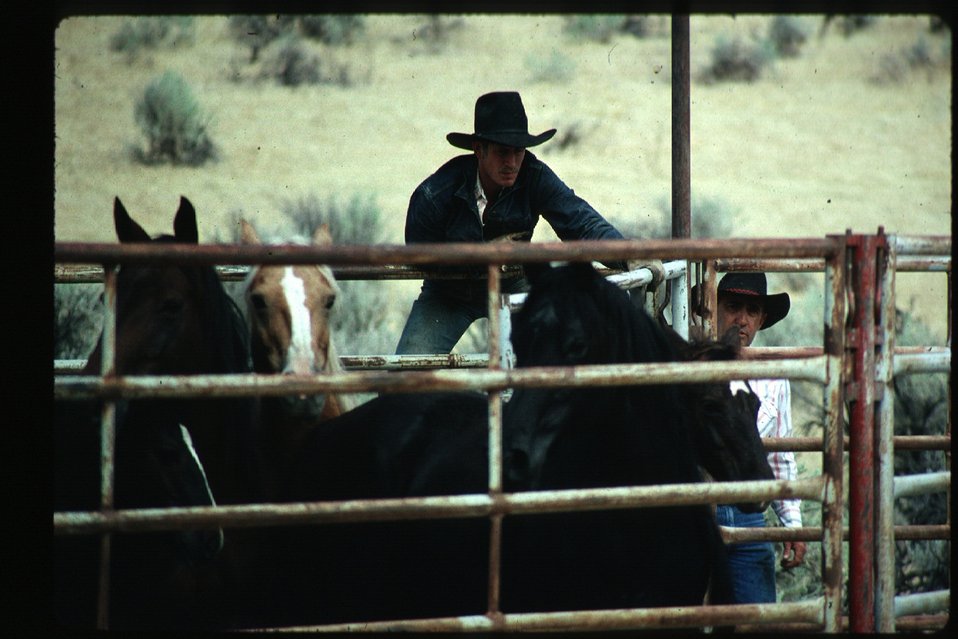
Wild Horse and Burro Gathering or roundup LSRD Lower Snake River District